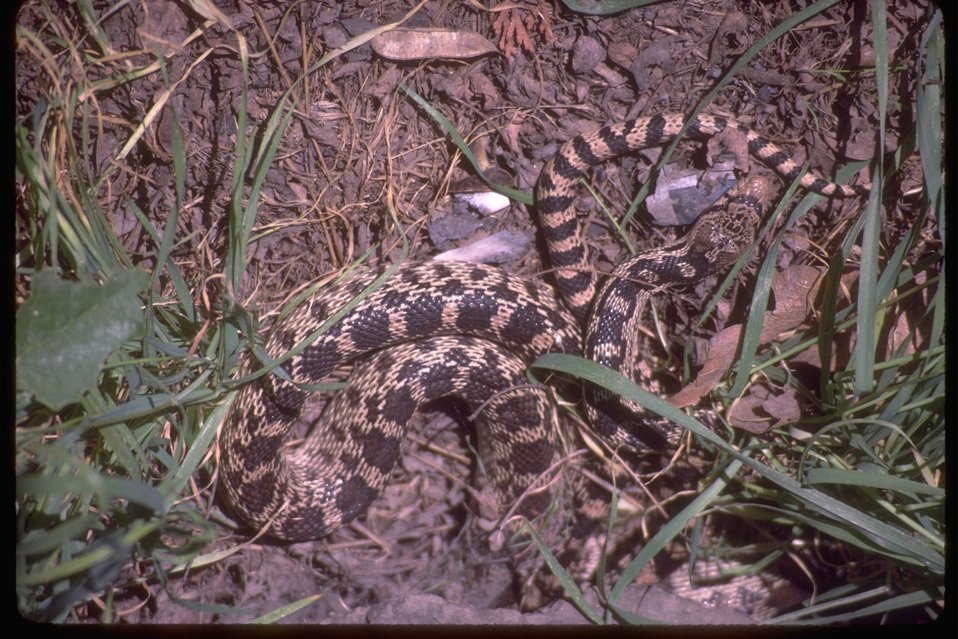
Western Bullsnake in Juniper Forest Management Area.